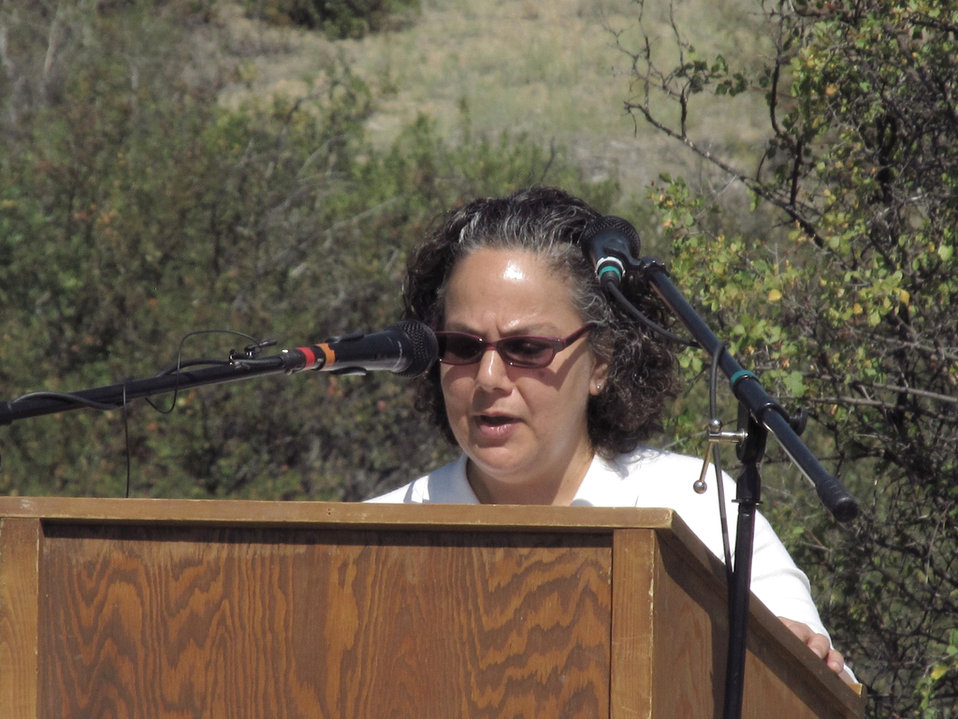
(L to R) Senator Michael Bennet (CO), Agriculture Secretary Tom Vilsack, Interior Secretary Ken Salazar, and Agriculture Under Secretary Natural Resources and Environment Harris Sherman speak to the press at the at the dedication of Chimney Rock as a National Monument in the San Juan National Forest in Southwest Colorado on Friday, Sept. 21, 2012. Chimney Rock is of great spiritual importance to Pueblos and other Tribes in the southwest corner of Colorado. With its twin sandstone pillars and its massive Chaco- style masonry walls perched 1,000 feet above the Piedra River Valley the monument protects a landscape important to the continuation of traditional cultural practices of the modern Puebloan Indians.